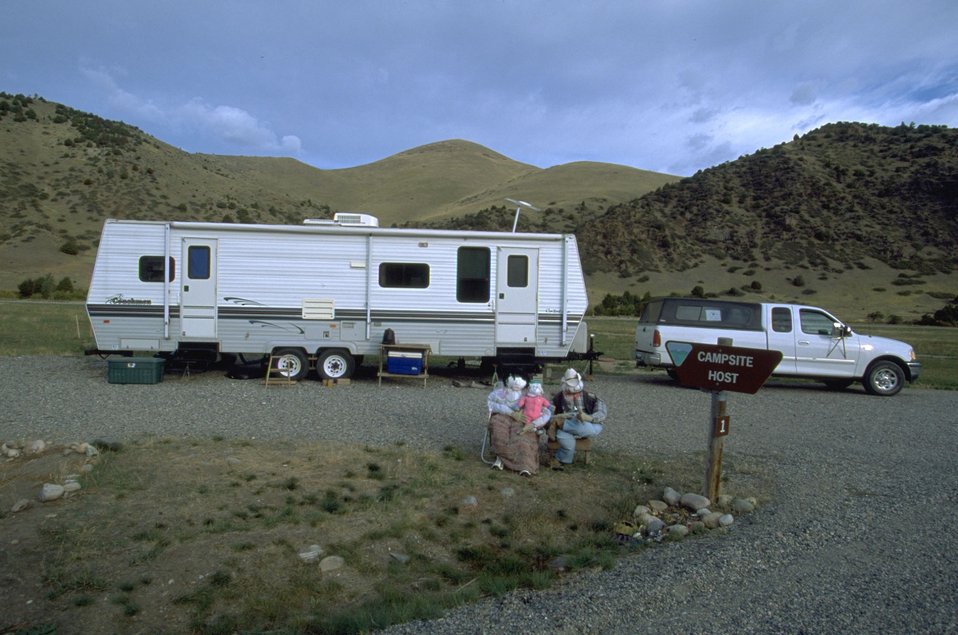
Camping Spot for Camp Hosts at Red Mountain